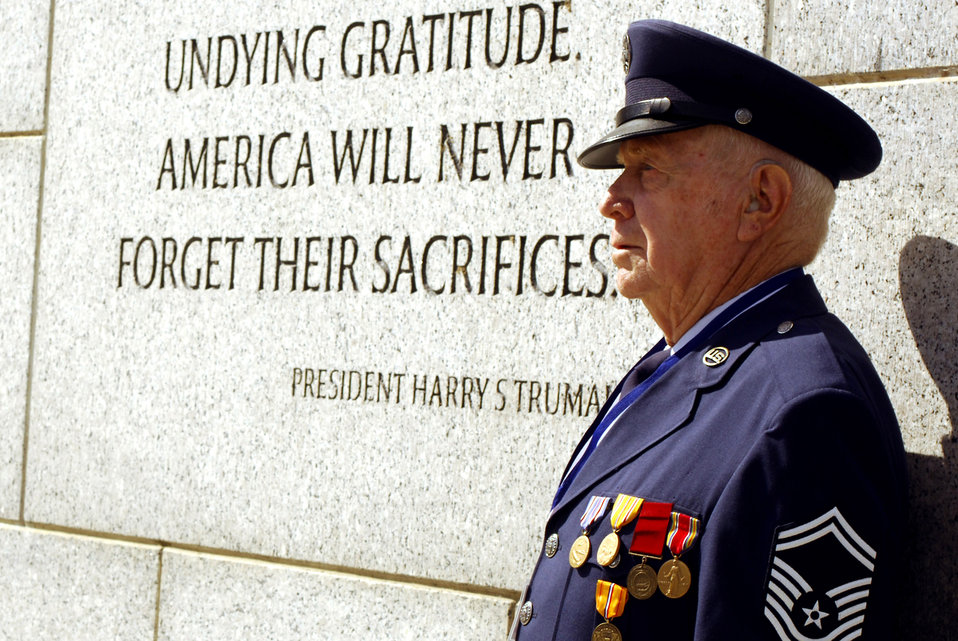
Hero Flight transports 122 WW II veterans in 2007

Retired Senior Master Sgt. Billy Neil poses near a quote by President Harry Truman at the National World War II Memorial during Hero Flight 2007 in Washington, D.C., Sept. 15. Hero Flight is an all-volunteer program that sets up trips to allow as many World War II veterans as possible to visit the National World War II Memorial.